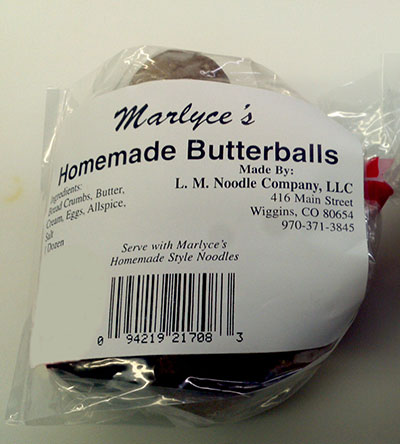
RECALLED – Butterballs cooked in soup

January 7, 2014 – Product Recall – L.M. Noodle Company Issues Allergy Alert on Undeclared Wheat Flour, Soy Flour Whey and Milk in Butterballs.